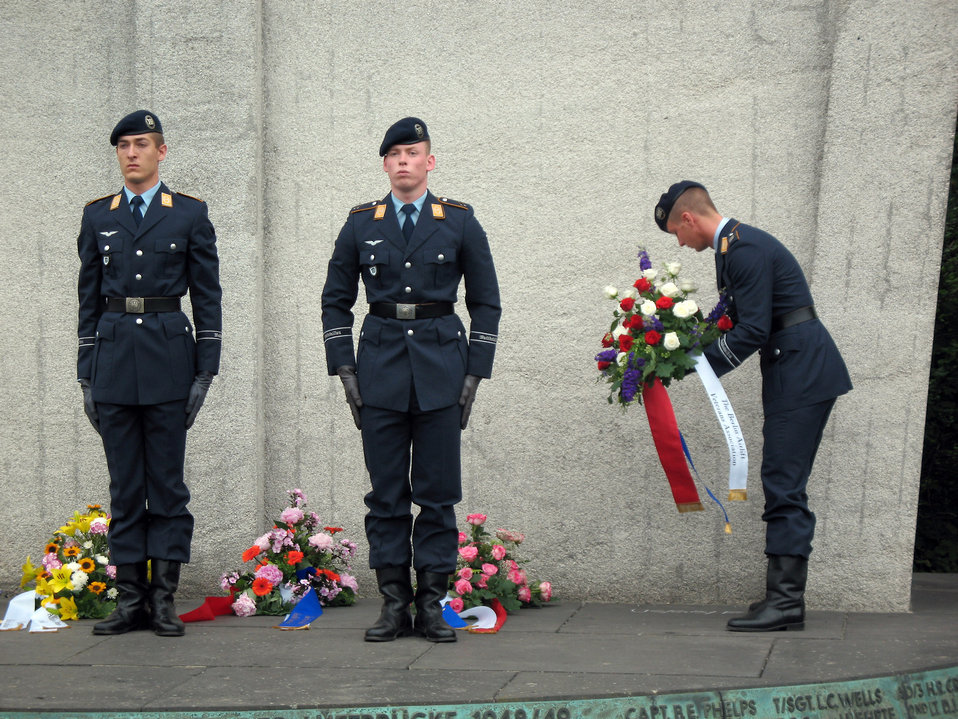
Remembering the Berlin Airlift

A German airmen lays a wreath at the Berlin Airlift Memorial outside of Tempelhof airport June 27 in Berlin. The ceremony honored the 78 airmen who gave their lives to sustain Berliners from June 24, 1948, to May 12, 1949.